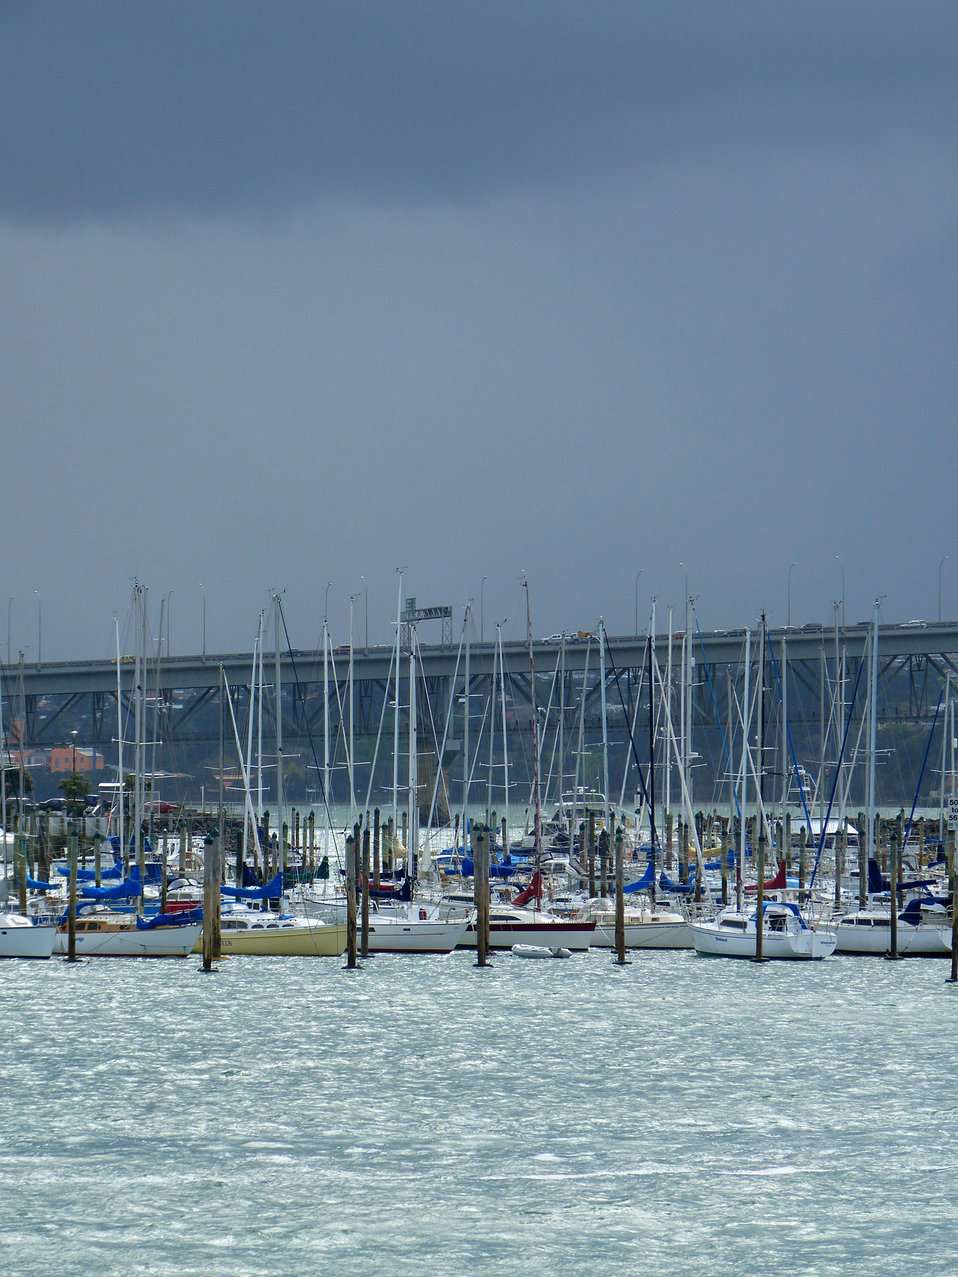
Port before rain in auckland.